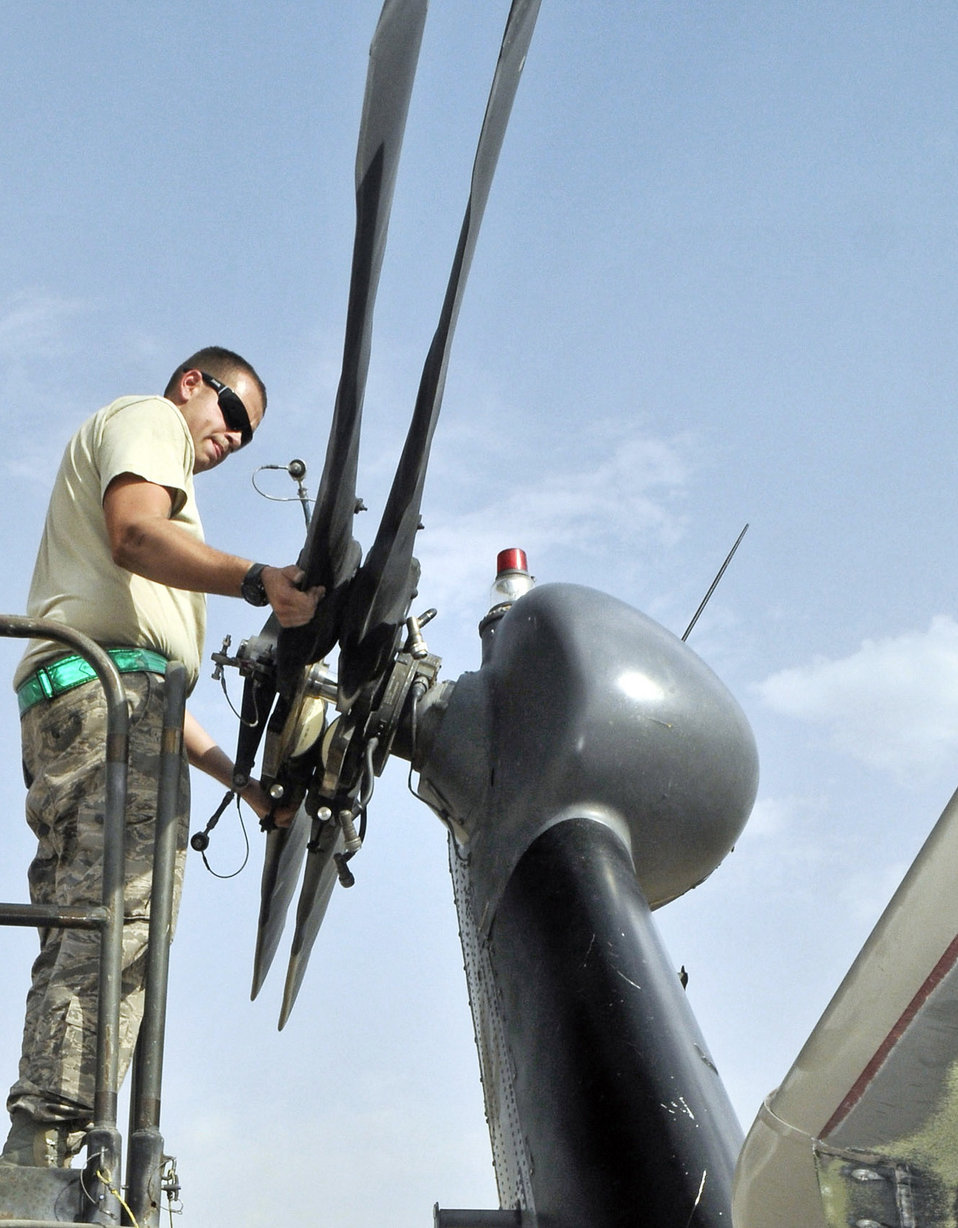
Moving HH-60 Pave Hawks

Senior Airman Ronald Hastings unfolds the tail rotor of a HH-60 Pave Hawk helicopter at Joint Base Balad, Iraq, after they received it from a unit in Afghanistan Aug. 12, 2010. Airman Hastings, a native of Pittsburgh, Pa., is deployed with the 332nd Expeditionary Aircraft Maintenance Squadron.